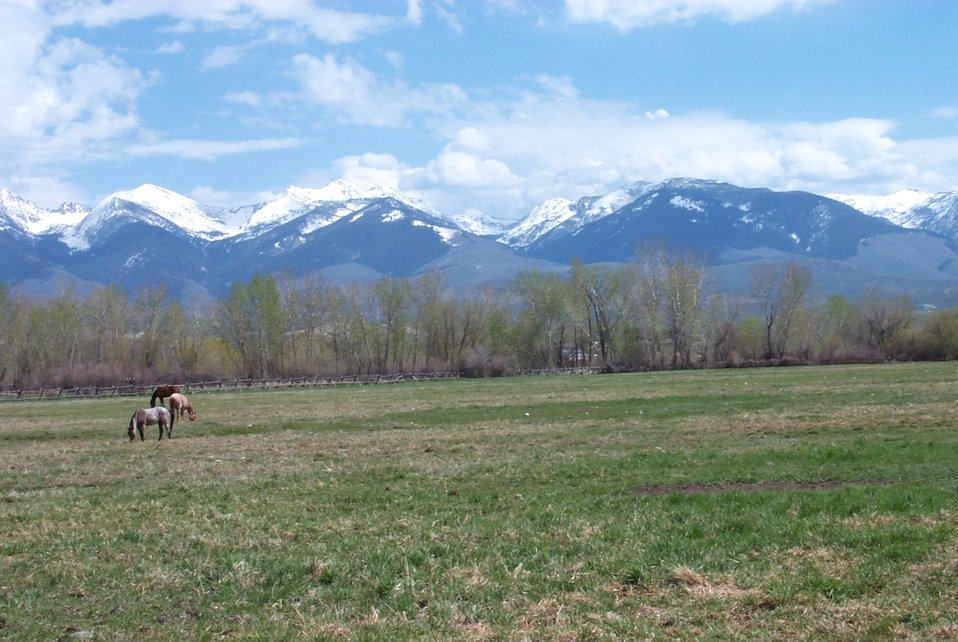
Realty Public access Exchange Salmon Field Office UCSC Upper Columbia Salmon Clearwater District